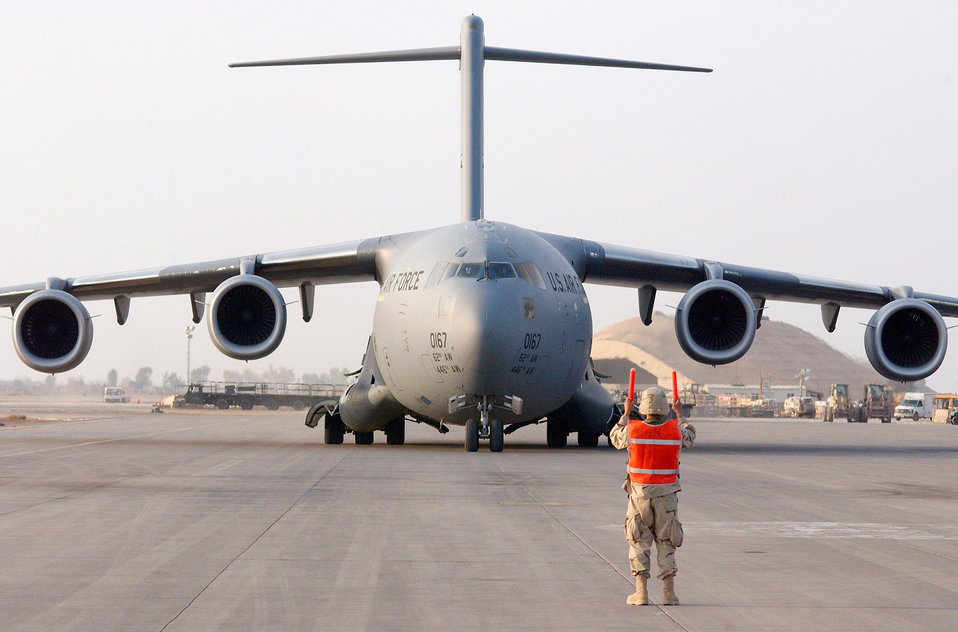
Park place

BALAD AIR BASE, Iraq -- Senior Airman Brandon Withers guides a C-17 Globemaster III to its parking spot on the flightline here Nov. 5. Airman Withers is a 332nd Expeditionary Aircraft Maintenance Squadron jet engine mechanic deployed here from the 62nd Airlift Wing at McChord Air Force Base, Wash. The 332nd EAMS is part of the 332nd Air Expeditionary Wing, the only Air Force wing in Iraq.